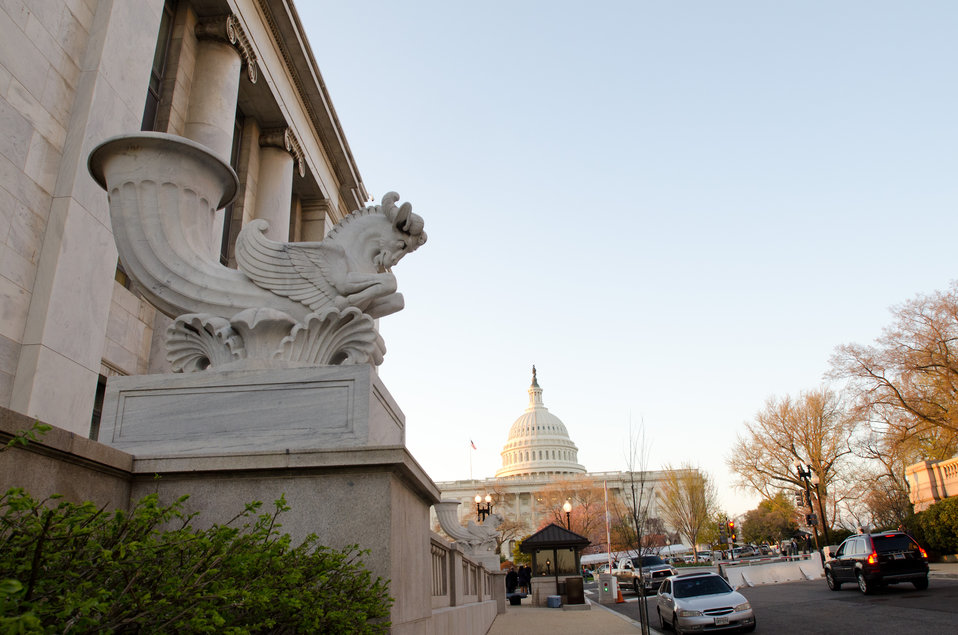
Information, pamphlets and agents from the Research, Education and Economics (REE) U. S. Department of Agriculture attended Congressional Visits Day at the Rayburn House Office Building (left) in Washington, DC, on Wednesday, April 6, 2011. The event allows U.S. representatives, staff and Capitol Hill visitors the opportunity to learn about the REE mission and the impact on America. REE's leadership responsibility is to advance scientific knowledge related to agriculture through research, extension, and education.